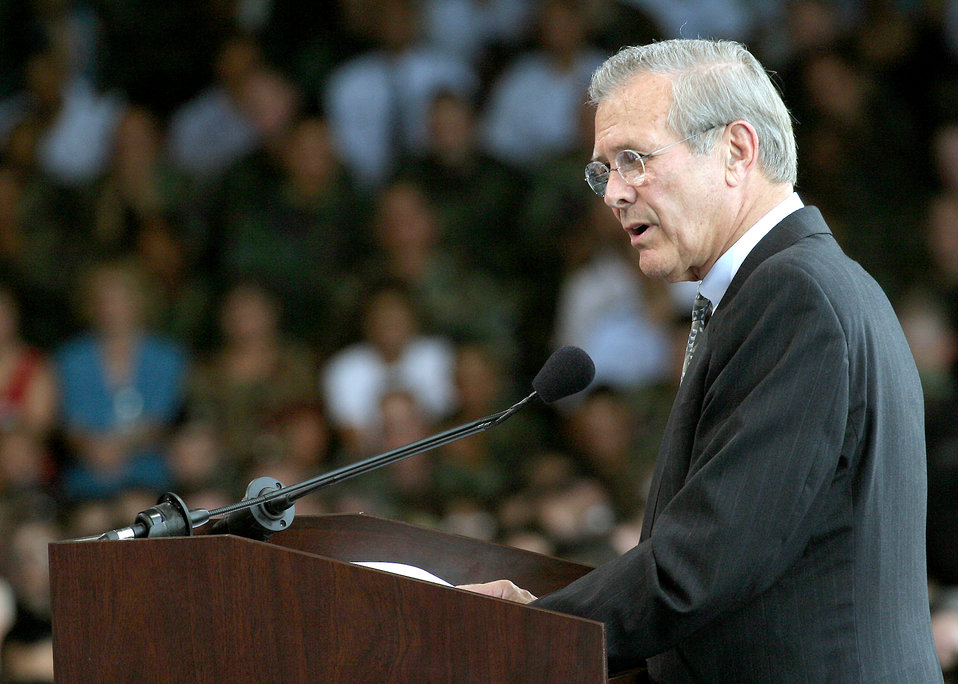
Rumsfeld address

LACKLAND AIR FORCE BASE, Texas -- Secretary of Defense Donald Rumsfeld addresses the crowd during a town hall meeting here Aug. 25. He spoke to about 3,500 servicemembers from installations in the San Antonio area.